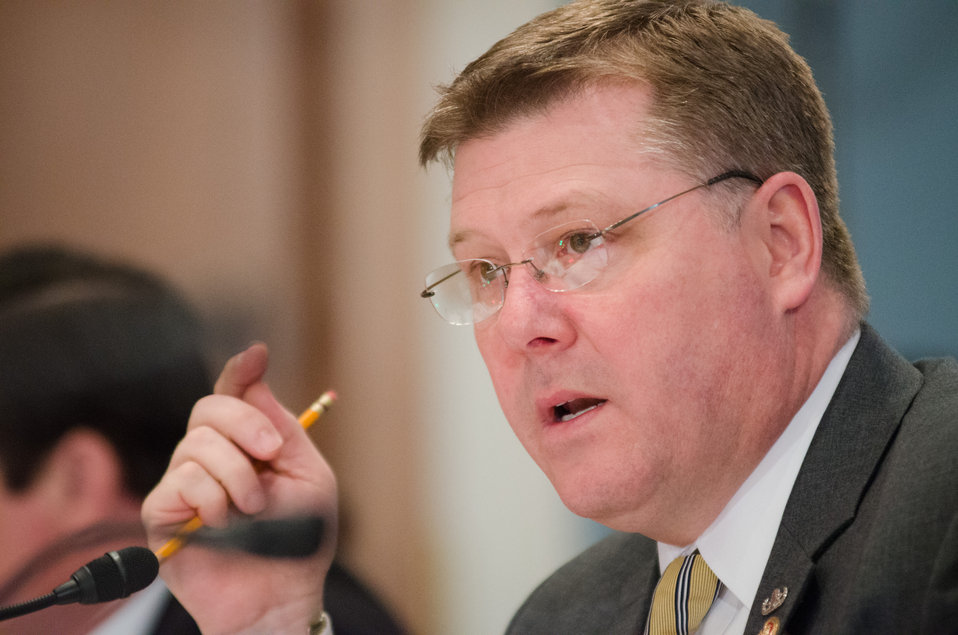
Representative Rick Crawford (AR) questions Agriculture Secretary Tom Vilsack, not seen, during testimony before the House Agriculture Committee regarding the “State of the Rural Economy“ at the Longworth House Office Building in Washington, D.C. on Tuesday, Mar. 5, 2013.